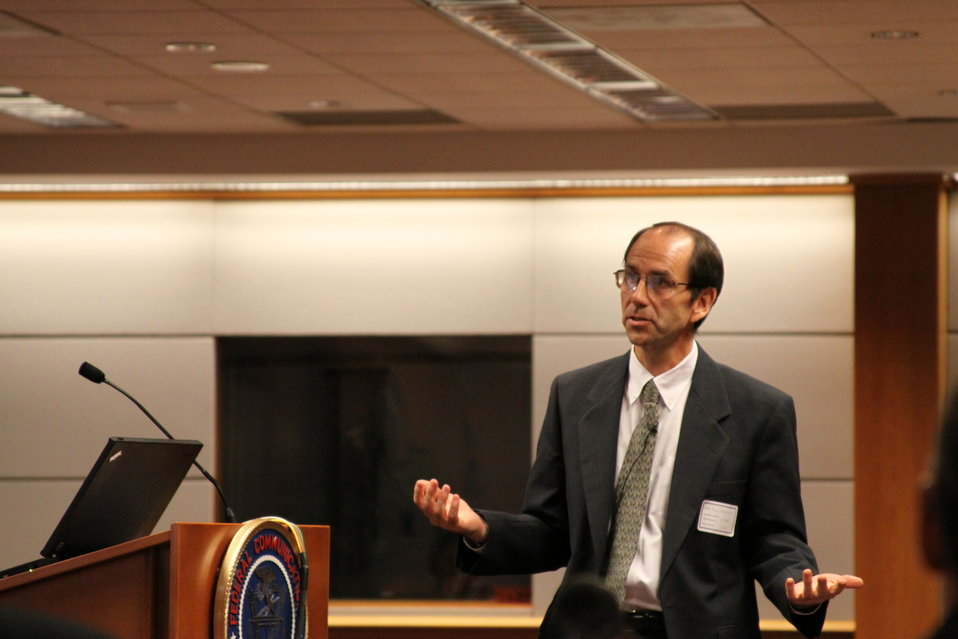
First Open Internet Workshop 12-8-09